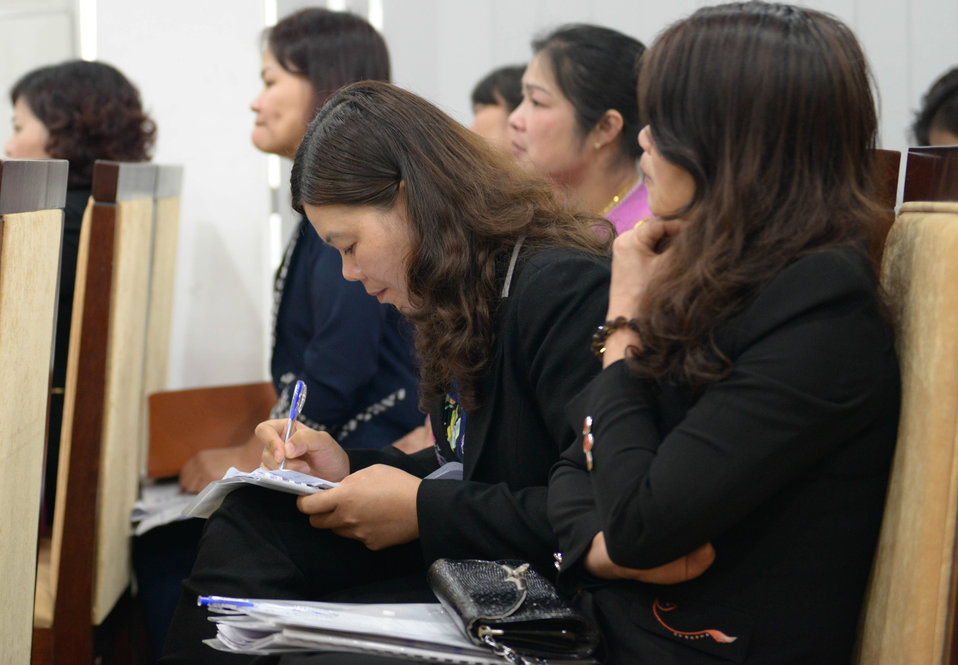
International Women's Day Seminar for female entrepreneurs

Phu Tho, Vietnam. March 1, 2014.